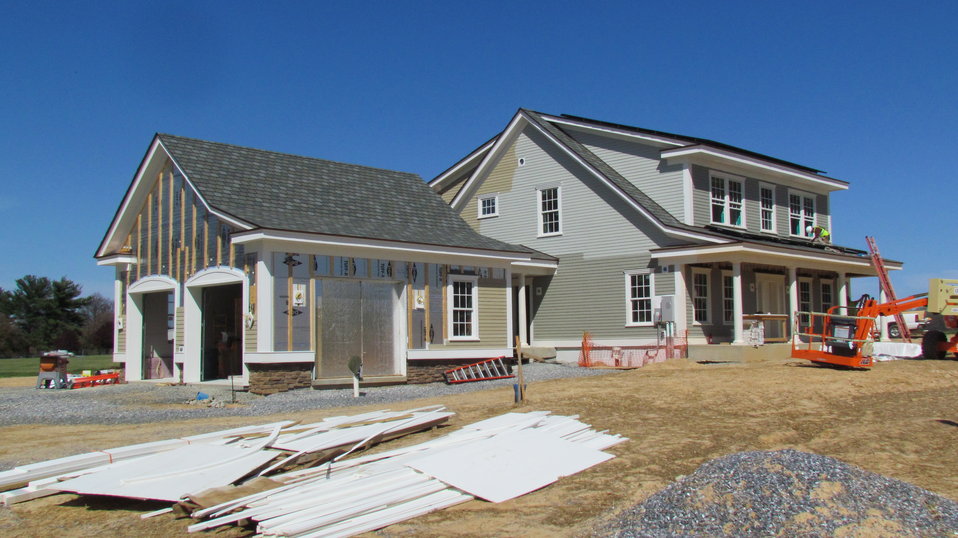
Workman working towards completion of solar hot water system installation. Three different colors of siding are apparent in this photo. The siding comes primed with a base coat. The other two colors shown are after the application of one and two-coats of paint at the job site.